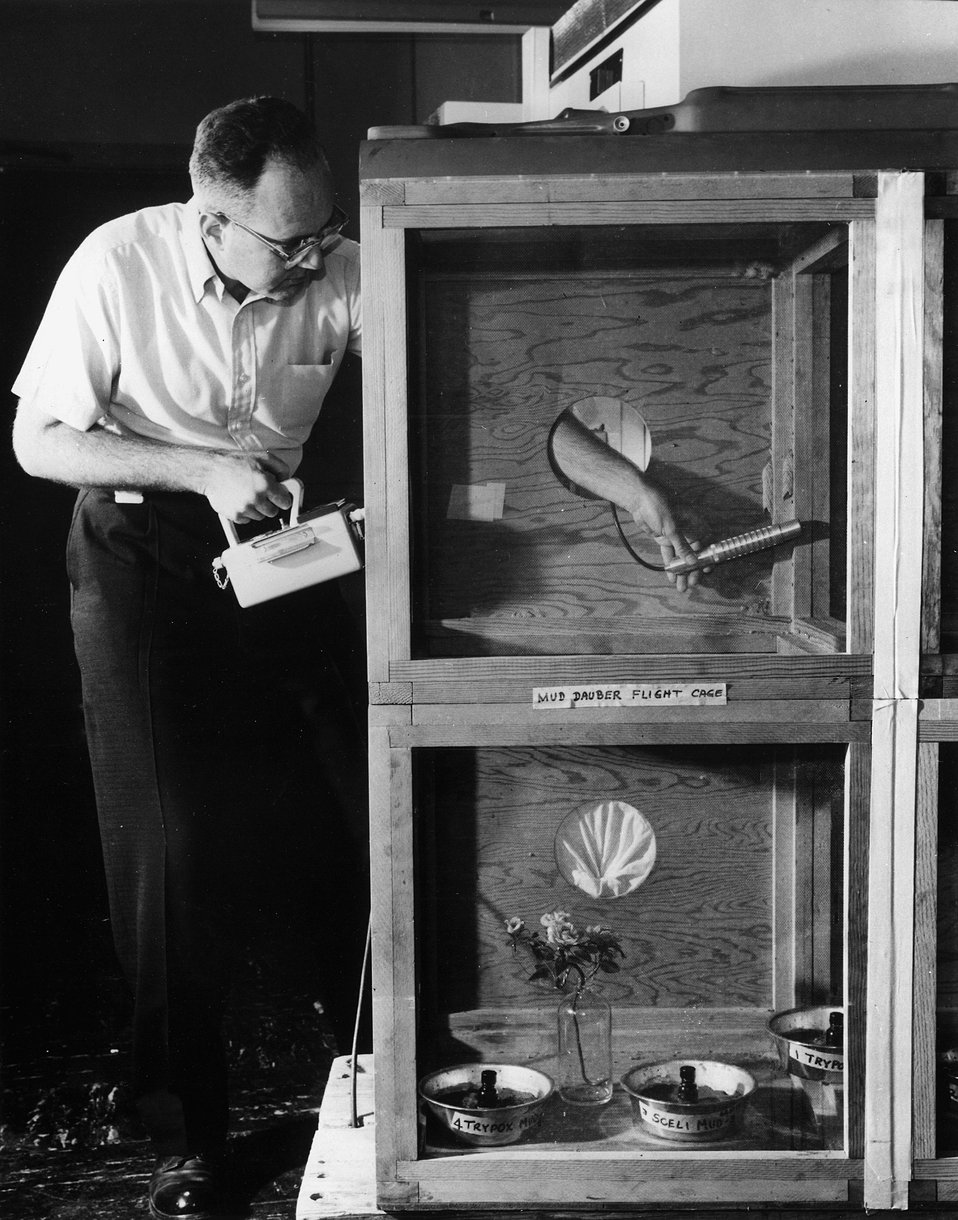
An Oak Ridge National Laboratory Ecologist, A.F. Shinn inspects nests made by mud dauber wasps in a laboratory cage. c. 1967